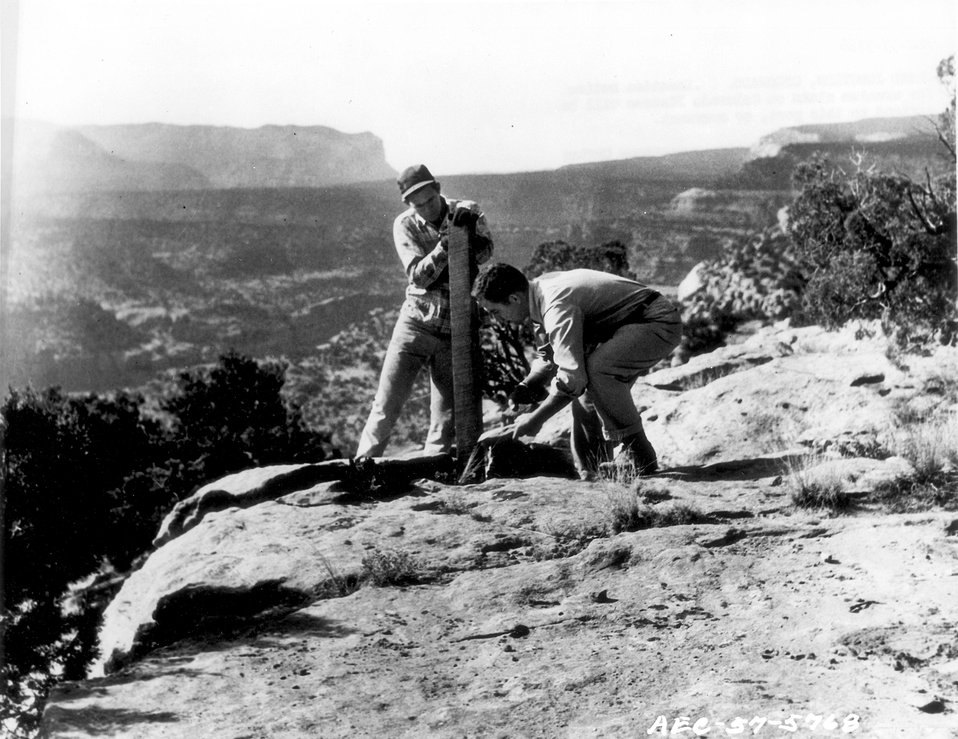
Location notice for uranium claims in Colorado Plateau will be affixed to this post, or monument. c. 1957